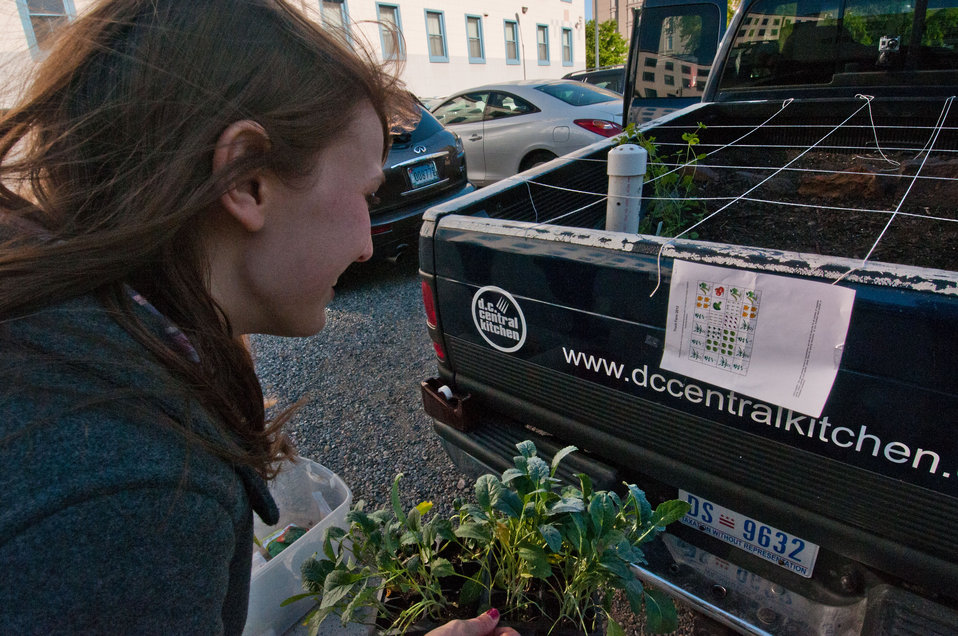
D.C. Central Kitchen’s Nutrition Out Reach Coordinator Lydia Mills studies the planting plan at Truck Farm’s during a chilly morning start in Washington, D.C., on Friday, April 6, 2012. The plants will go into one of the 25 sections identified with a string grid attached to the truck. This Truck Farm is a D.C. Central Kitchen and U.S. Department of Agriculture People’s Garden Initiative partnership that, like other Truck Farms around the country, will travel around the city to schools and community sites, teaching children about healthy eating and where their food comes from through the garden display in its truck-bed. Along with other local donors, the People’s Garden Initiative supports this “edible exhibit” by providing seedlings and educational materials. Ms. Mills is on staff with D.C. Central Kitchen for one year as part of her year of AmeriCorps VISTA service.